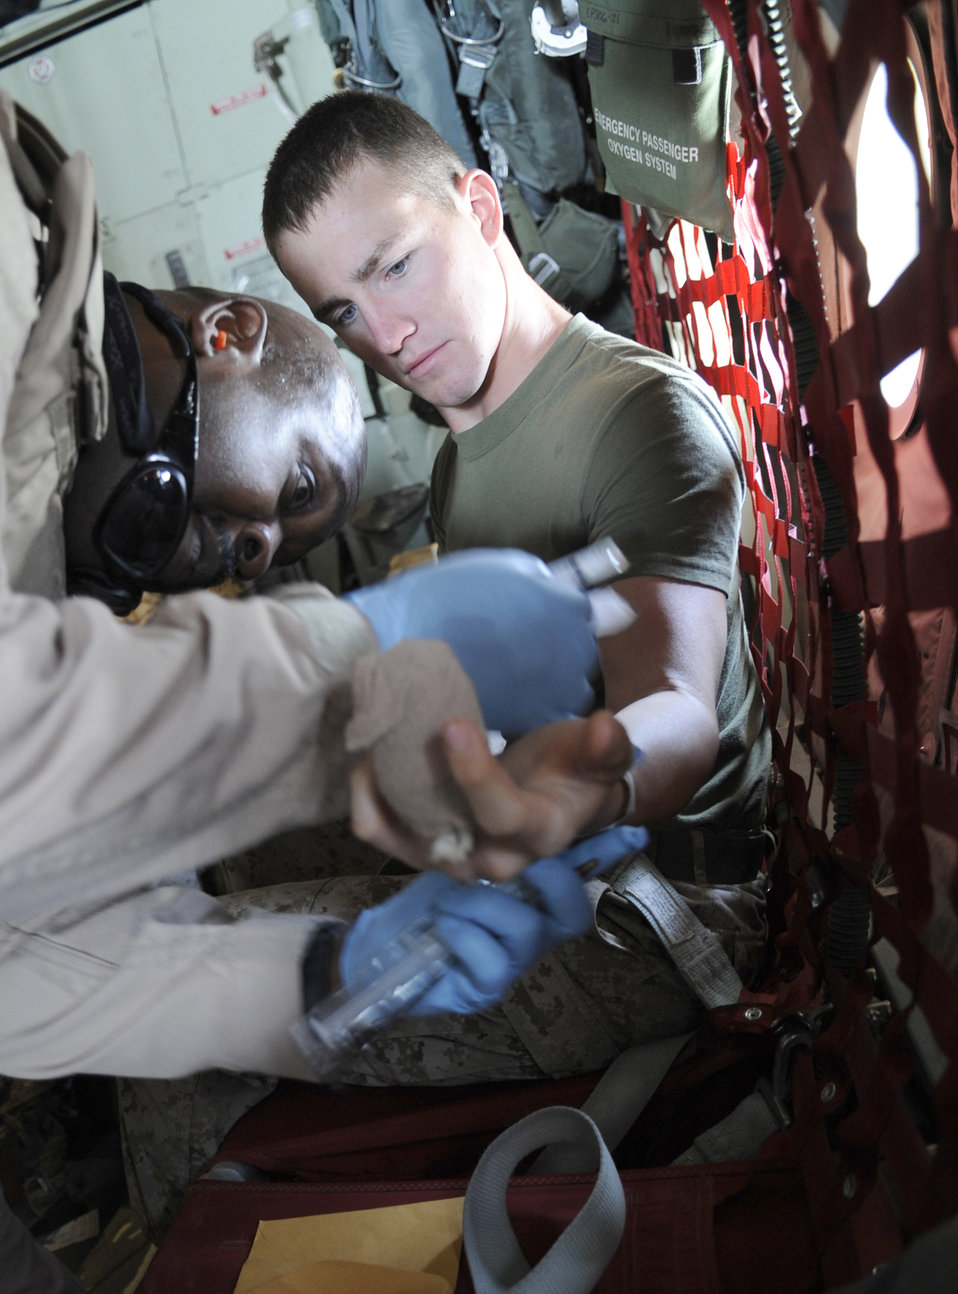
Aeromedical evacuation missions

Staff Sgt. Anthony Green gives Lance Cpl. Joshua Foster a shot to relieve the pain from his injuries June 9 on a C-130J Hercules. Lance Corporal Foster suffered injuries to his fingers during a work incident at a forward operating base in Afghanistan. Sergeant Green is a reservist stationed at Charleston AFB, N.C and is currently assigned to the 451st Expeditionary Aeromedical Evacuation Squadron.